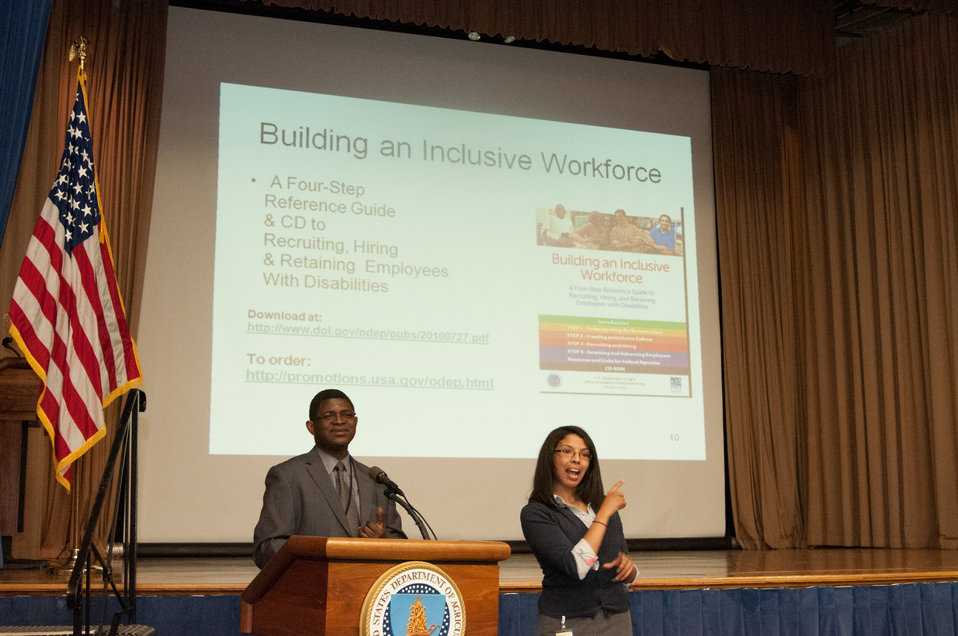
Department of Labor Office of Disability Employment Policy representative Akinyemi Banjo discusses Federal wide resources available to disability employment program managers at the U.S. Department of Agriculture (USDA) Office of Human Resources Management (OHRM) Disability Employment Program Team Training at USDA in Washington, D.C. on Tuesday, May14, 2013. Olivia Battle interprets for hearing-impaired employees during the event.